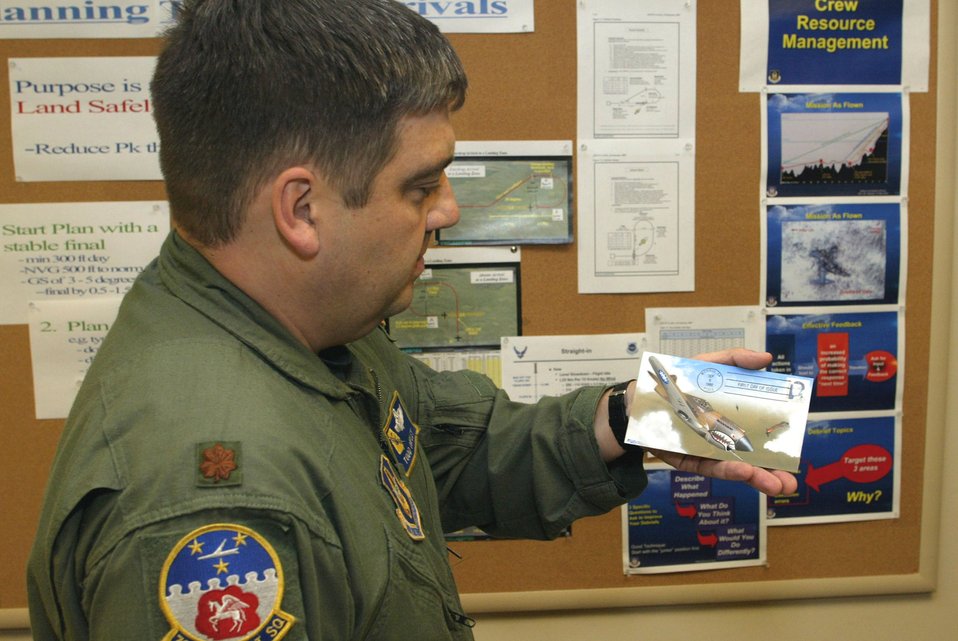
Pilot combines love of stamps, aviation to celebrate Air Force Anniversary

Maj. Todd Copley displays one of the pieces from his prize collection that depicts a P-40 Aircraft flown by members of the American Volunteer Group in 1940. Major Copley is with the 700th Airlift Squadron, Dobbins Air Reserve Base, GA.